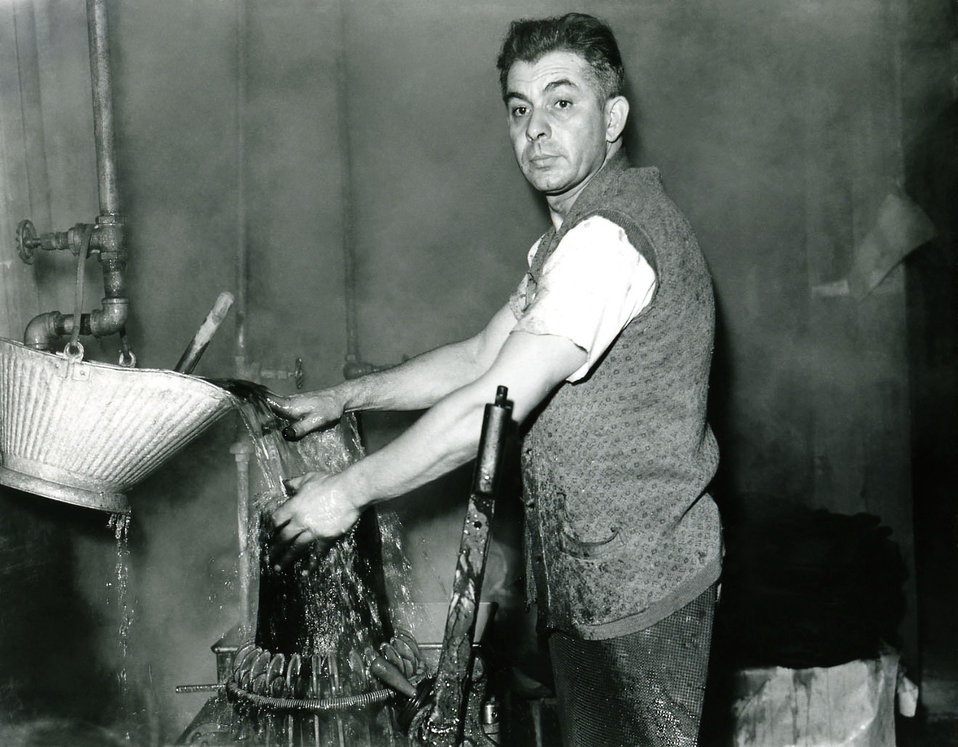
This photograph shows a man 'blocking' a hat on a cone-shaped mold in a felt hat-making factory where public health officials conducted numerous studies which focused on the effects of mercury upon workers who are exposed to this heavy elemental metal. (See complete series: PHIL ID#s: 6810 - 6813).